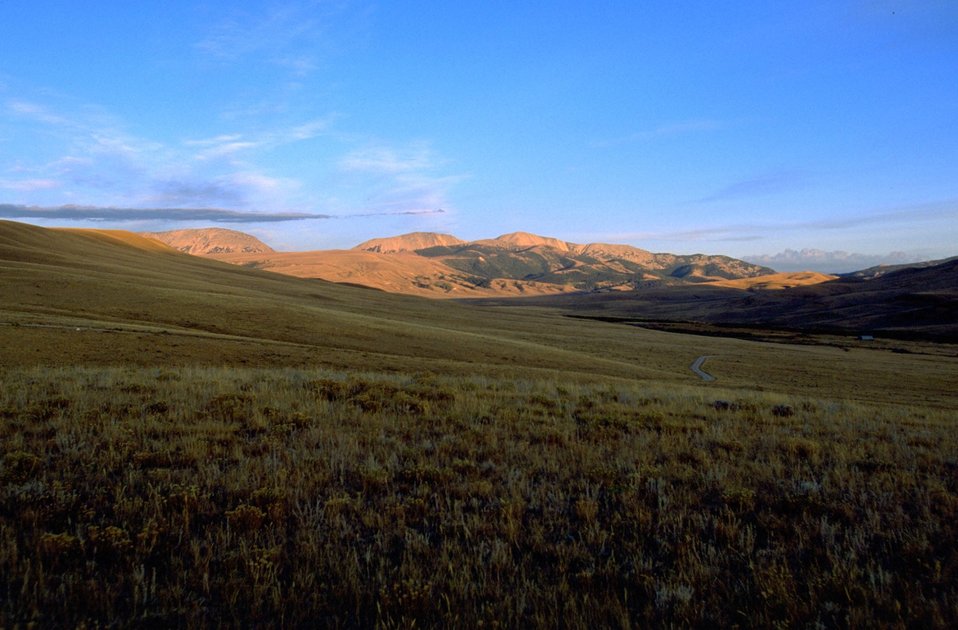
Sun setting on mountains above campground